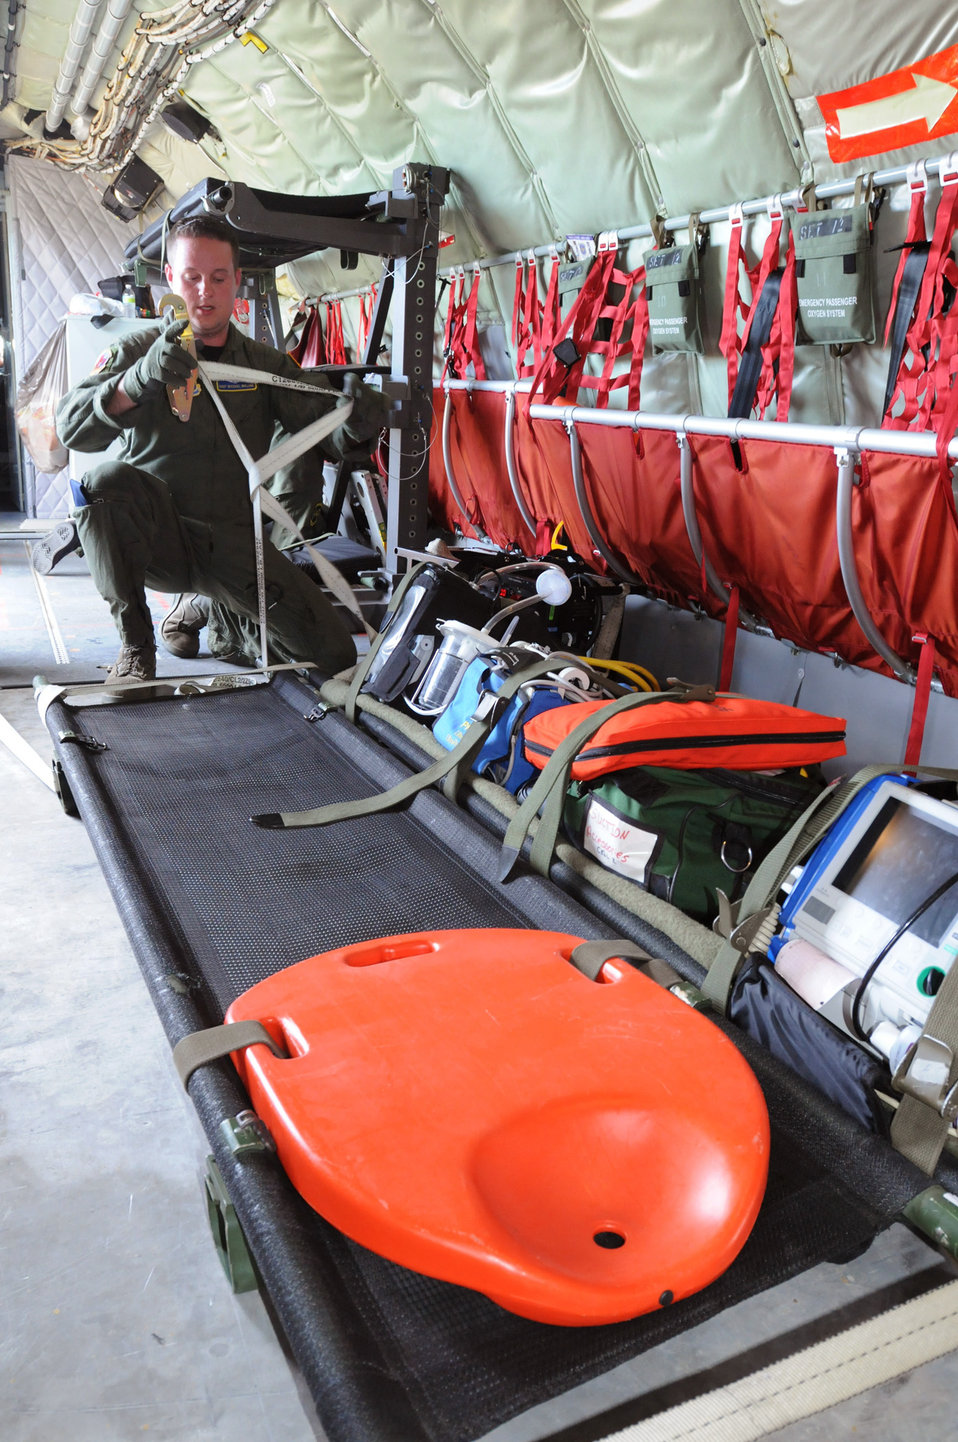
Total force aeromedical evacuation technicians gain unique training

Staff Sgt. Michael Malone secures a patient litter prior to taking off aboard a KC-135R Stratotanker June 27, 2010 at Melbourne, Fla. Sergeant Malone joined other Airmen from the 459th AES, 36th AES and the 43rd AES in a three-day total force aeromedical evacuation training mission. Sergeant Malone is assigned to the 36th Aeromedical Evacuation Squadron.